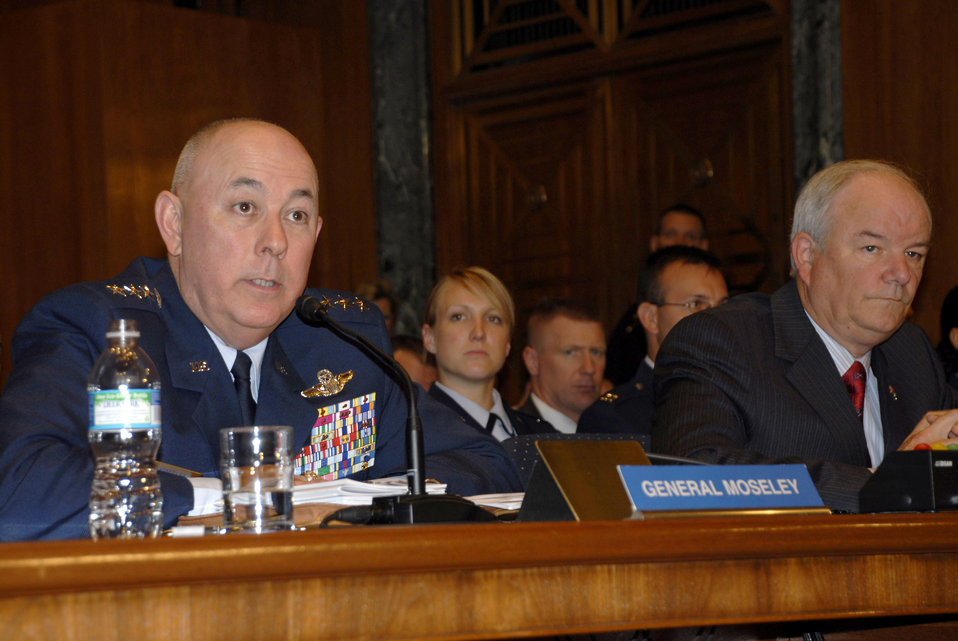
Top leaders testify on '09 budget

Air Force Chief of Staff Gen. T. Michael Moseley and Secretary of the Air Force Michael Wynne testify on the fiscal 2009 budget March 12 before the Senate Committee on Appropriations Subcommittee on Defense. Both leaders also testified on the budget before the House committee March 11.